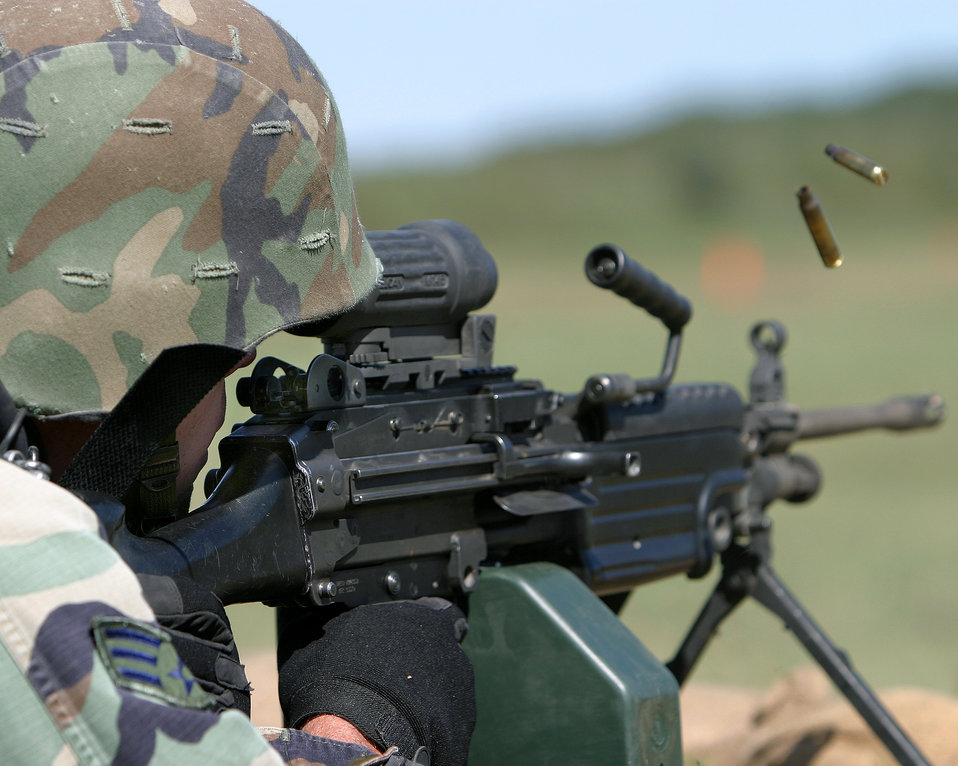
Defender Challenge '03

CAMP BULLIS, Texas -- A competitor fires down range during the Combat Rifle event at the Defender Challenge 2003 security forces competition. The challenge featured 12 all-star security forces teams from Air Force major commands, the British Royal Air Force Regiment and the Department of Energy competing here Oct. 10 to 16. The defenders from Air Mobility Command took top honors in the Combat Rifle event.